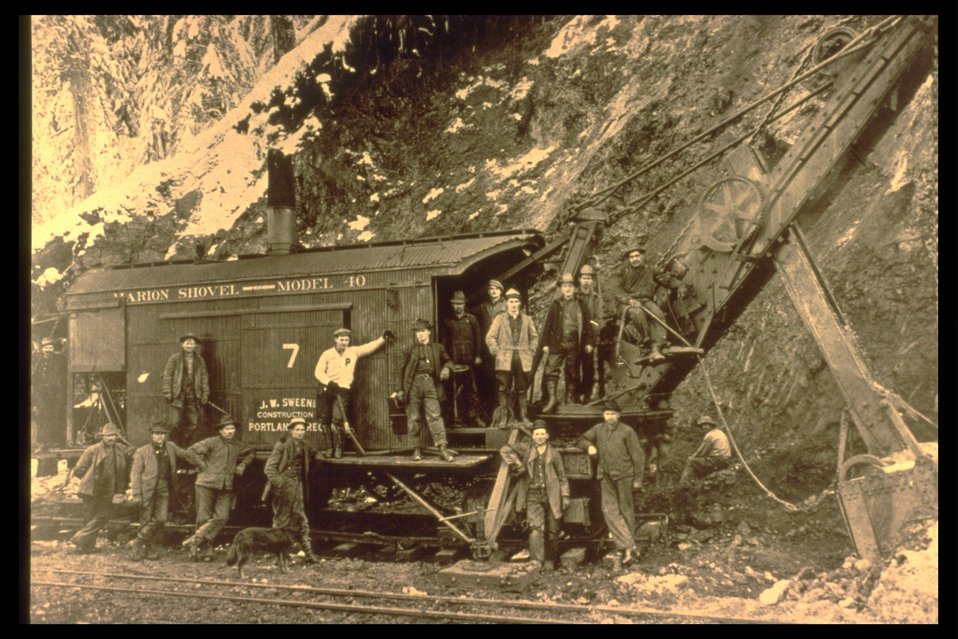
Black and white photo of workers posing on a steam shovel.